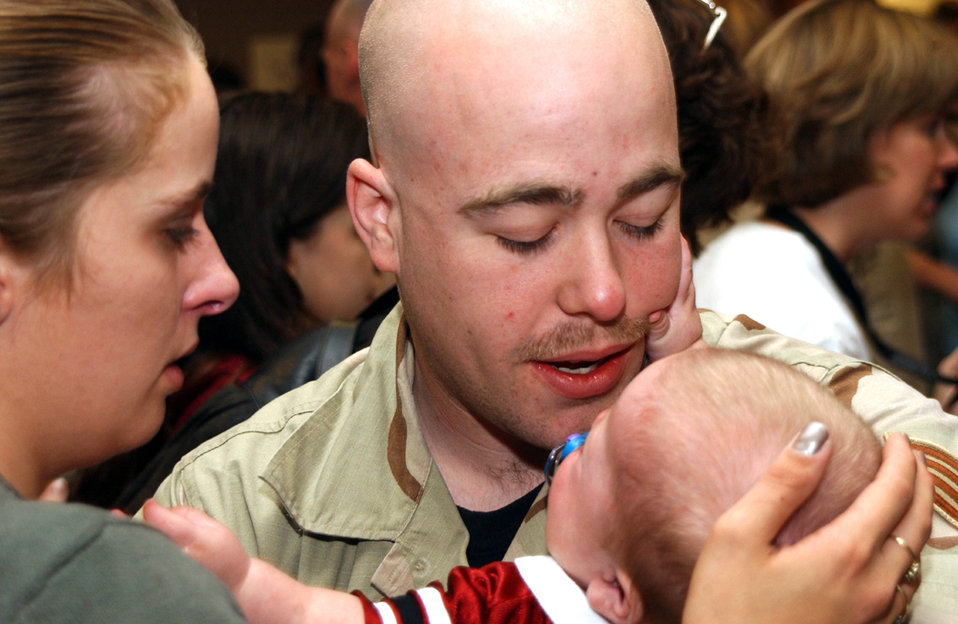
I'm back!

EIELSON AIR FORCE BASE, Alaska -- Staff Sgt. Landon Huffman holds his 6-month-old son, Nolan, while his wife, Katie, watches during a homecoming ceremony here Sept. 15. Sergeant Huffman deployed to Bagram Air Base, Afghanistan, two days after his son was born. He is assigned to the 355th Fighter Squadron.